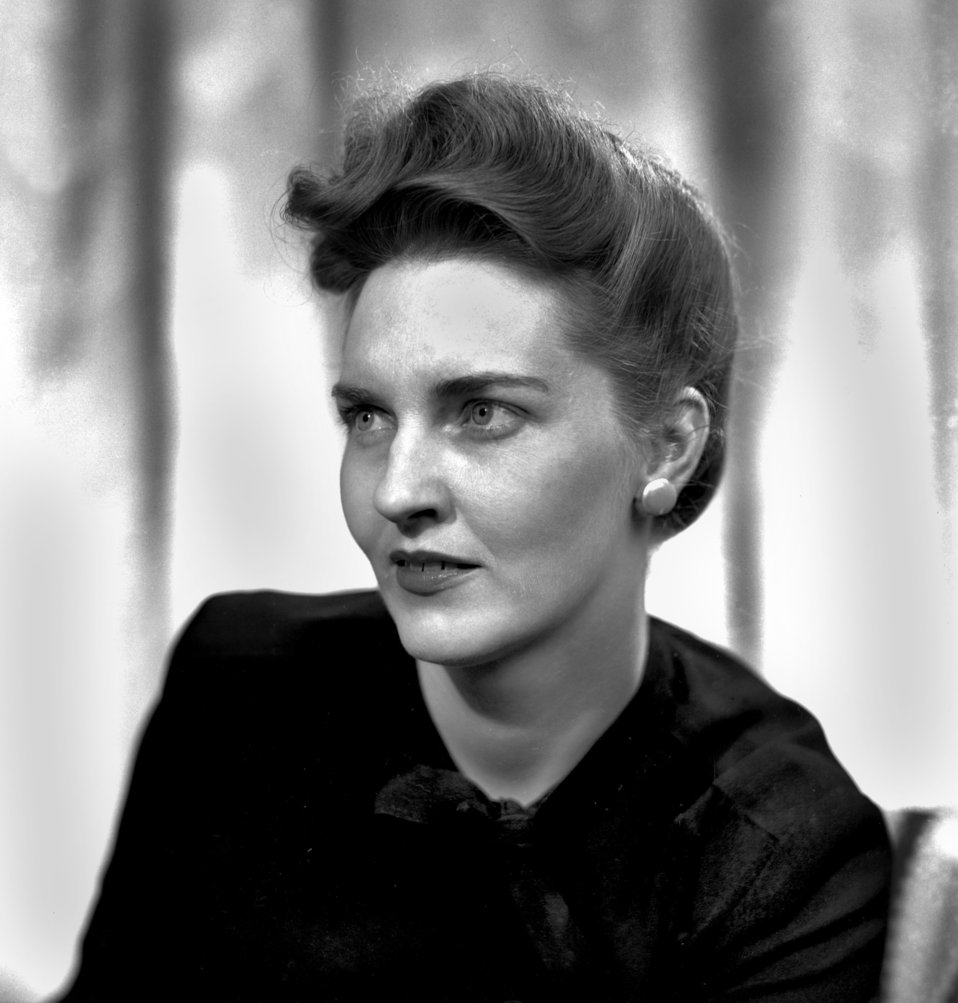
Women's Portrait Oak Ridge

3230-5 DOE photo Ed Westcott 1-9-1947 Oak Ridge Tennessee